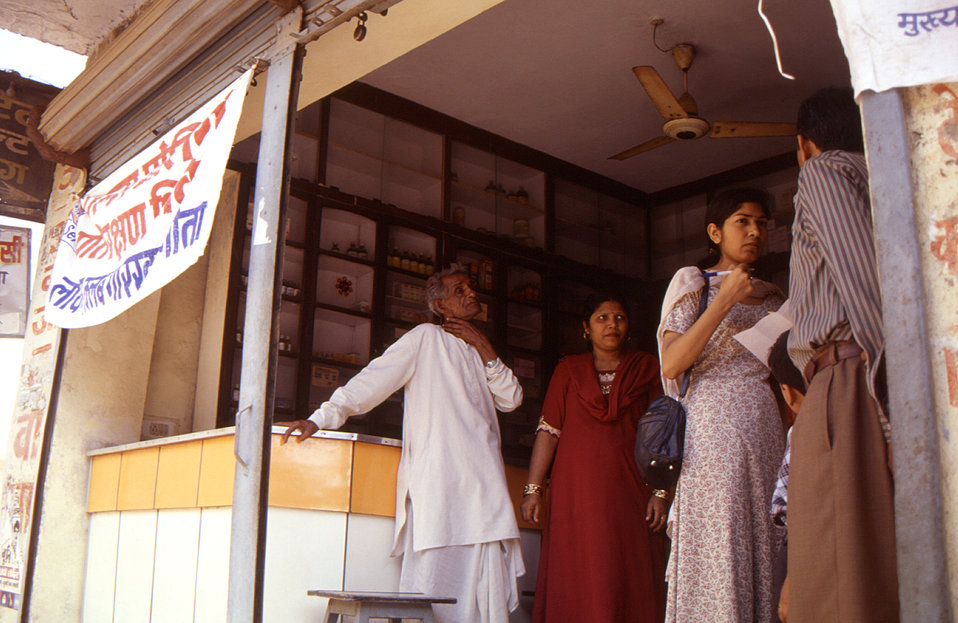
This 2000 image, provided by Chris Zahniser, B.S.N., R.N., M.P.H., depicted a pre-vaccination interview being conducted by health care practitioner, Ms. Vertika Arya (right, facing camera holding pen), who is querying a father and child, and explaining to them the details of the polio vaccination program. At the time, Chris Zahniser was a Stop Transmission of Polio (STOP) team member and photographer, who was assigned to the state of Uttar Pradesh in northern India, and spent three months working in the Districts of Gorakhpur and Deoria.